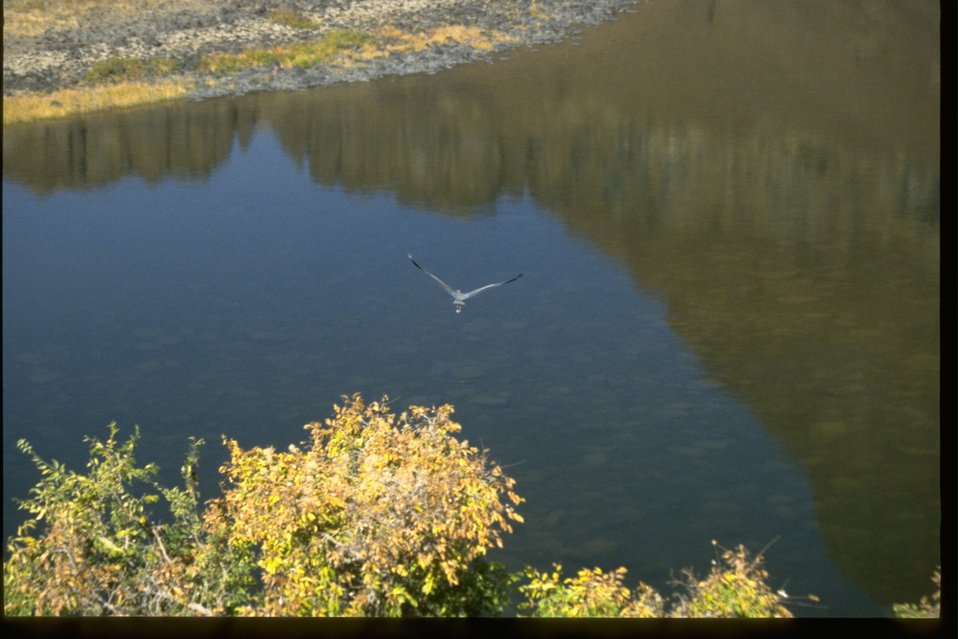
Heron taking flight after leaving perch on bush along the John Day River.